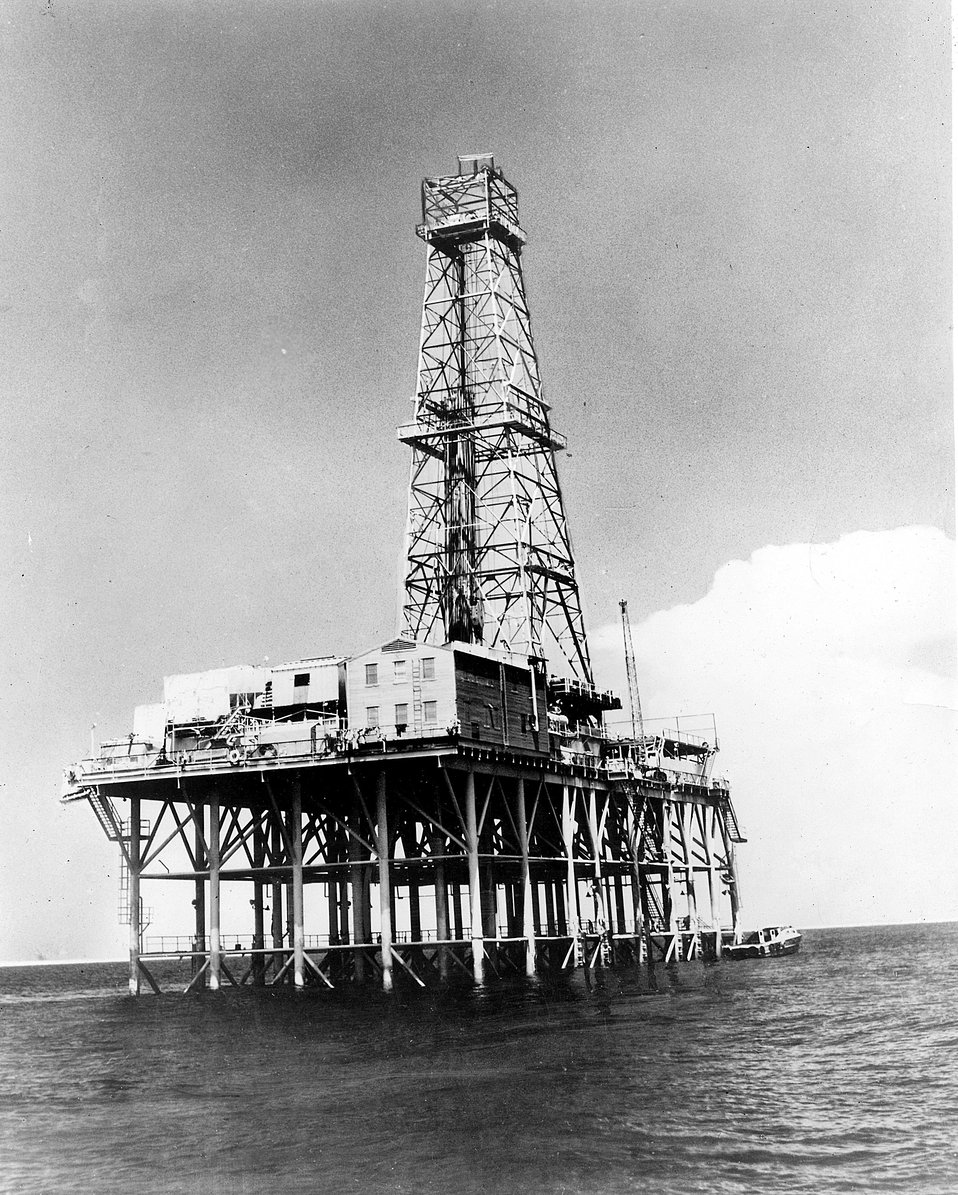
This drilling rig is made up of a steel island topped by a derrick 15 stories tall. The rig can drill six wells from one position. c. undated